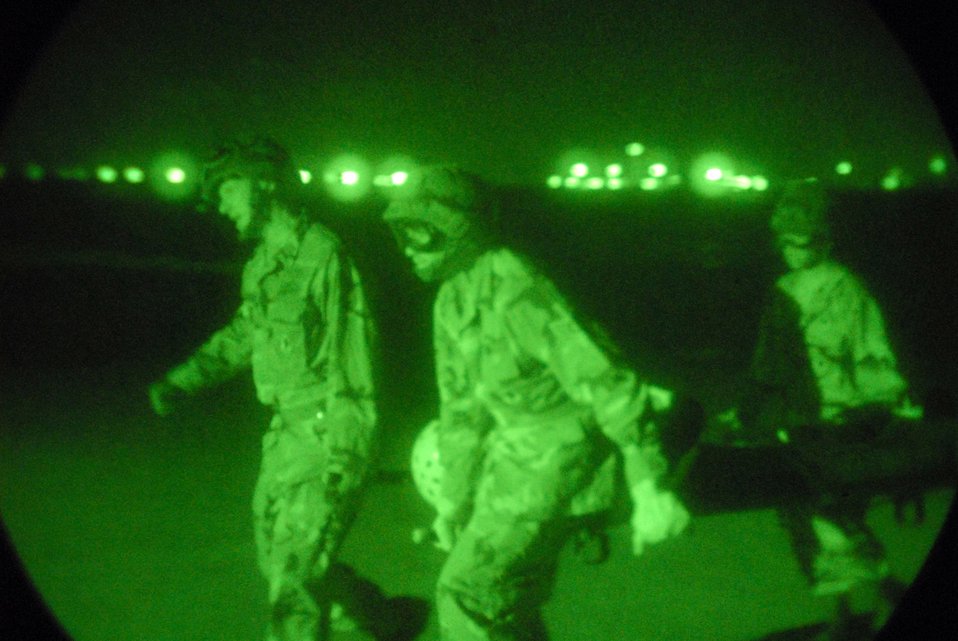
Mass casualty exercise

Airmen from the 18th Aeromedical Evacuation Squadron move swiftly to transport a simulated patient to a C-130 Hercules for evacuation during a mass casualty exercise at Kadena Air Base, Japan, Aug. 29.